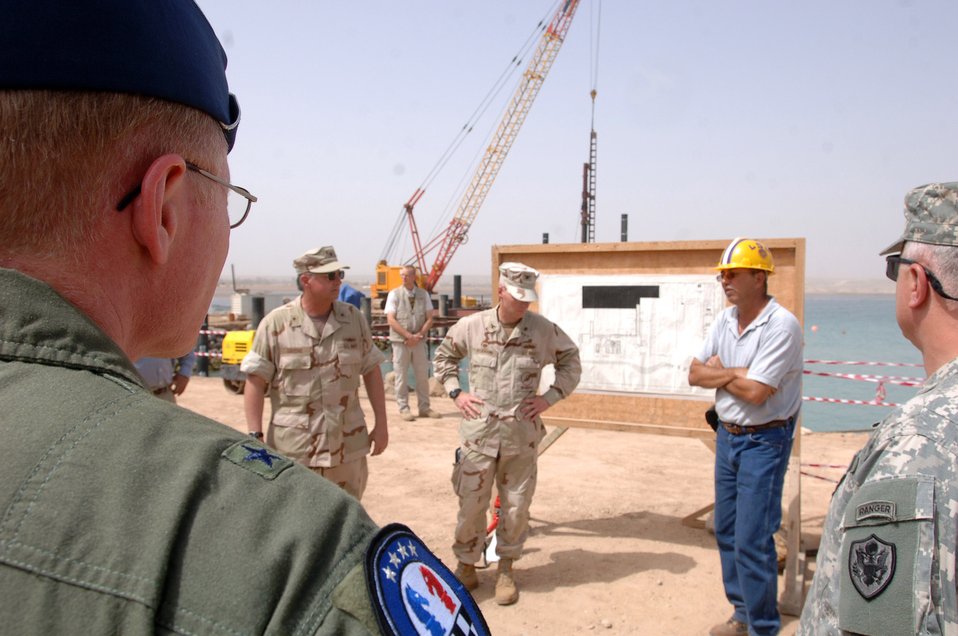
CJTF-HOA relationship with Djiboutians impresses CAPSTONE officers

U.S. military flag officers and civilian equivalents listen to a brief on the construction project of building a pier for the Djiboutian navy in Obock District, Djibouti. The senior leaders visited Combined Joint Task Force-Horn of Africa as part of their U.S. Central Command in an overseas field study, which is part of the CAPSTONE course designed for newly appointed generals.